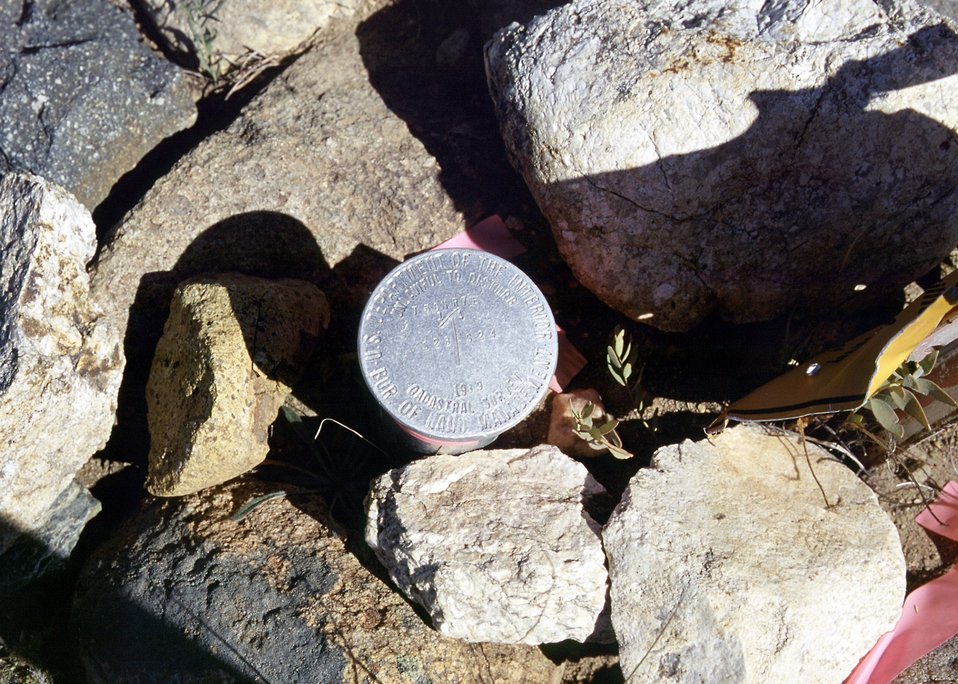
BLM Survey Marker